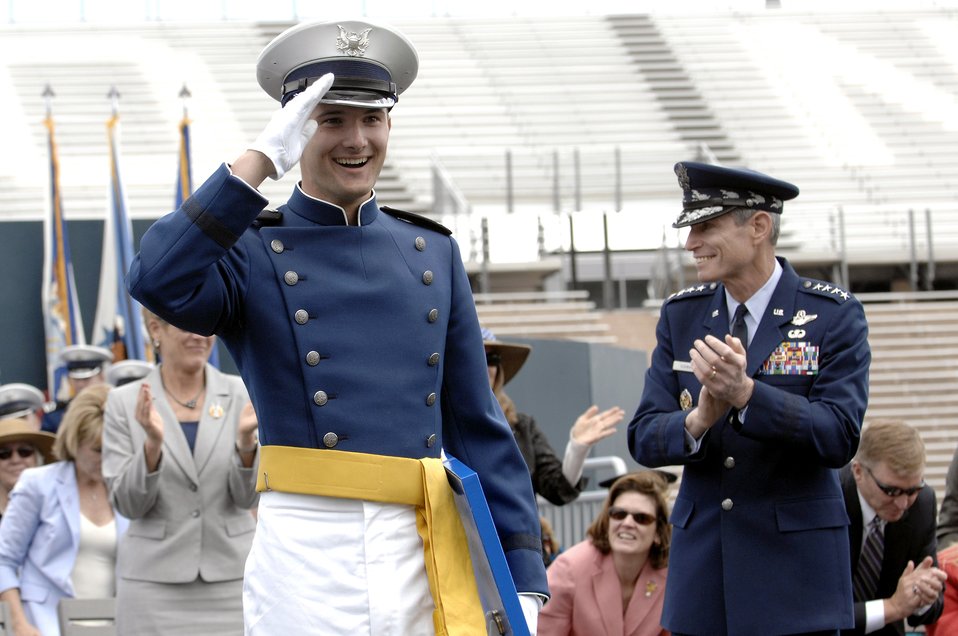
Joint Chiefs chairman delivers Academy commencement

Cadet 1st Class William Weindel salutes his classmates during the U.S. Air Force Academy class of 2010 graduation ceremonies May 26, 2010, at Falcon Stadium in Colorado Springs Colo. Cadet Weindel, the last cadet to cross the stage to receive his diploma, was honored with the traditional name